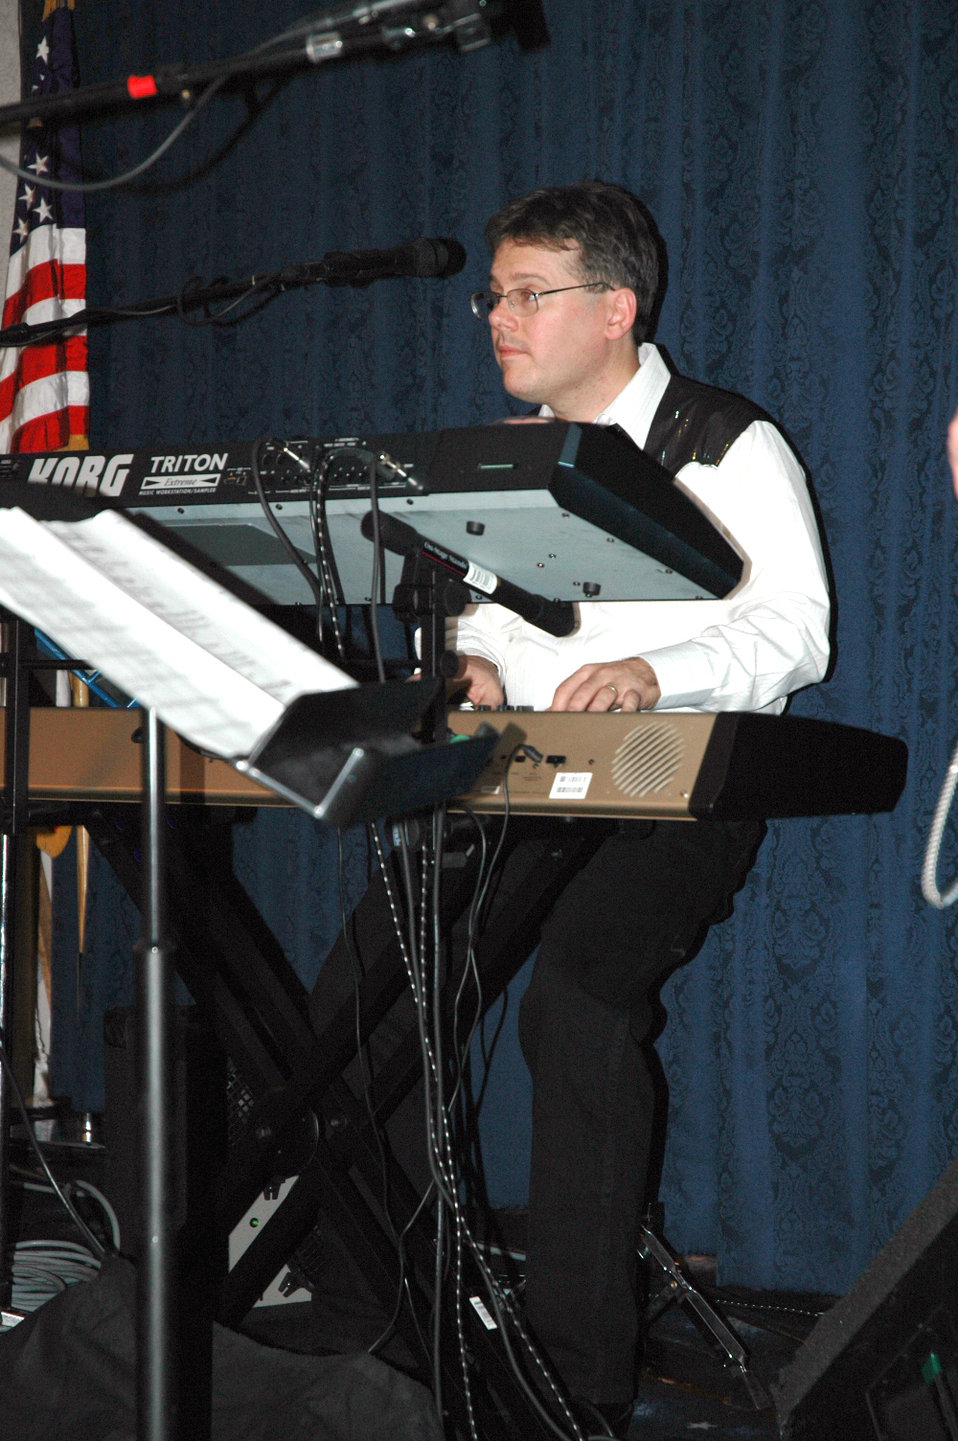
Medically retired band member recovers, rejoins USAF Band

BOLLING AIR FORCE BASE, D.C. -- Master Sgt. Mitchell Morton performs with the U.S. Air Force Band's Silver Wings. He recently returned to service after battling leukemia.